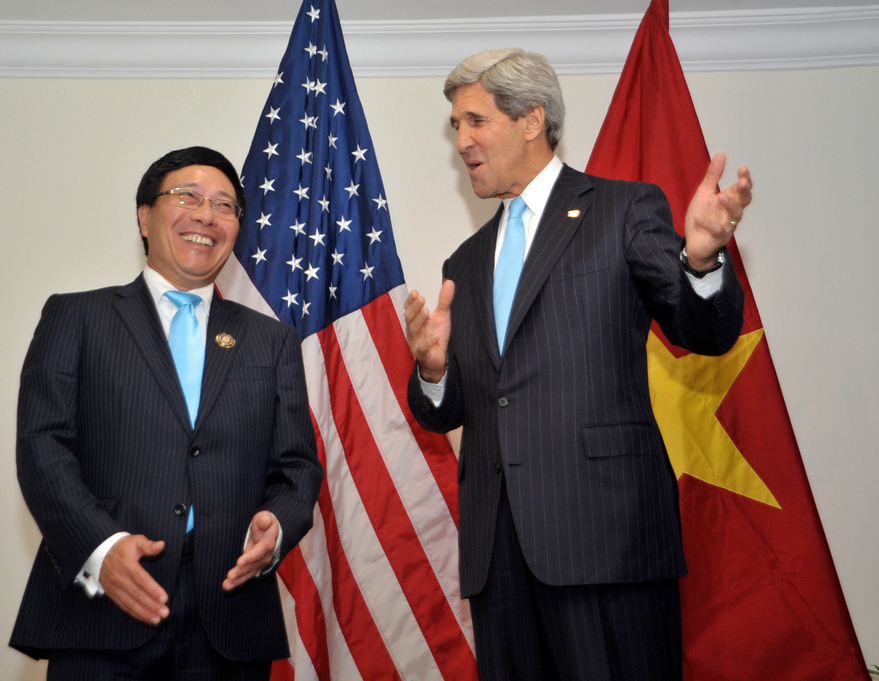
Secretary Kerry Meets With Vietnamese Foreign Minister

U.S. Secretary of State John Kerry laughs with Vietnamese Foreign Minister Pham Binh Minh before the two held a bilateral discussion in Bandar Seri Begawan, Brunei, on July 2, 2013.